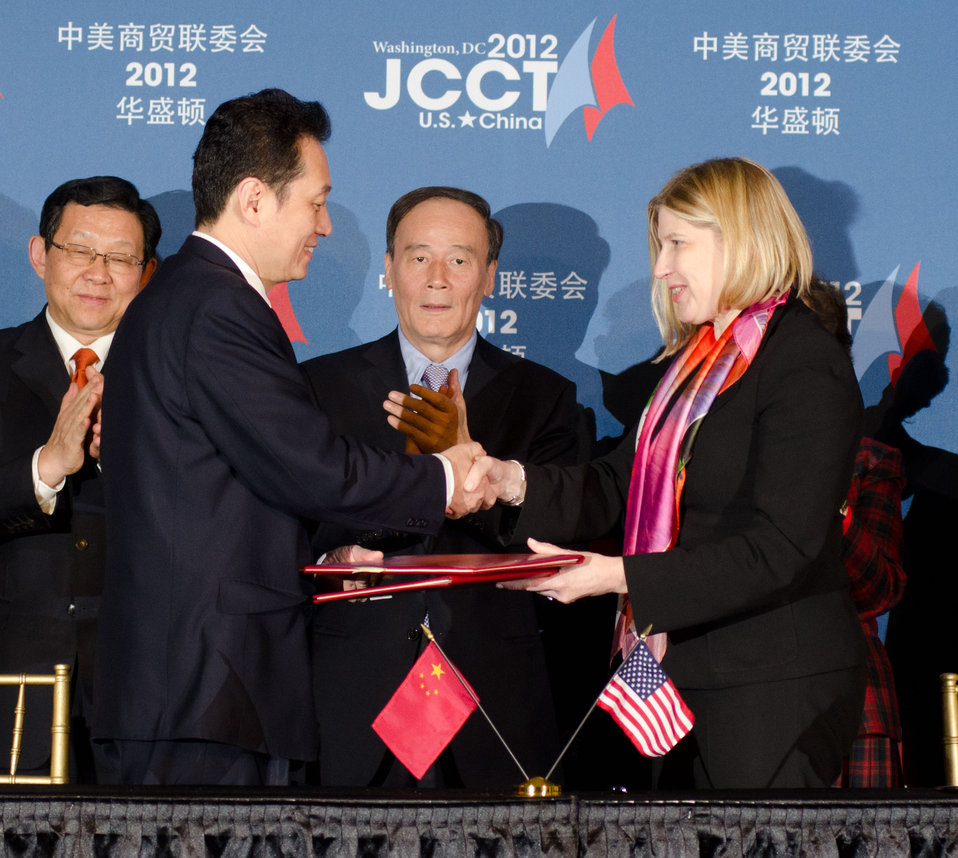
Chinese Ministry of Commerce Vice Minister Wang Chao (left) and U.S. Trade and Development Agency Acting Director Leocadia Zak (right) exchange signed copies of the Memorandum of Understanding between the U.S. Trade and Development Agency and the Ministry of Commerce of the People’s Republic of China in Support of U.S.-China Trade Cooperation, with the support of with the support of principal leaders from the Chinese delegates and U.S. hosts, (L to R) China’s Ambassador to the U.S. Zhang Yesui, Vice Minister of Industry and Information Technology Liu Lihua, Chinese Minister of Commerce Chen Deming, Chinese Vice Premier Wang Qishan, Acting U. S. Commerce Secretary Rebecca Blank, U.S. Trade Representative Ron Kirk and U.S. Ambassador to China Gary Locke during a signing ceremony at the conclusion of the 23rd Session of the US-China Joint Commission of Commerce and Trade at the Andrew W. Mellon Auditorium in Washington, D.C. on Wednesday, Dec. 19, 2012. Supporting the signing is Chinese Vice Premier Wang Qishan (center). The JCCT holds high-level plenary meetings on an annual basis to review progress made by working groups that focus on a wide variety of trade issues. These working groups meet throughout the year to address topics such as intellectual property rights, agriculture, pharmaceuticals and medical devices, information technology, tourism, commercial law, environment, and statistics.